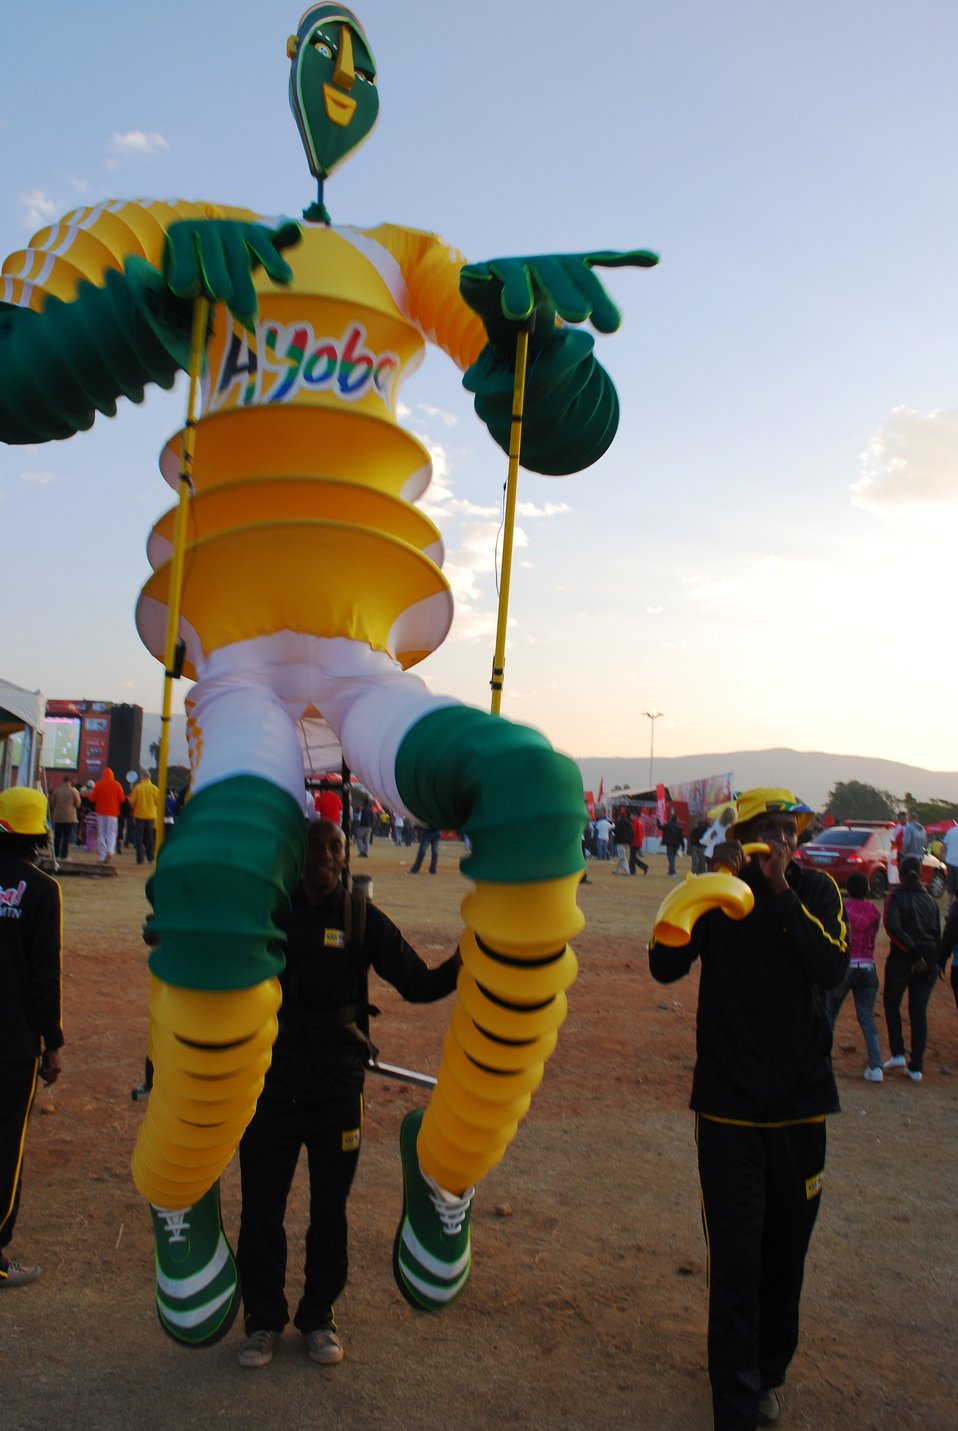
World Cup Character Display

A South African World Cup character is shown at the fan park outside of the Royal Bafokeng stadium in Rustenburg, South Africa, on June 12, 2010.